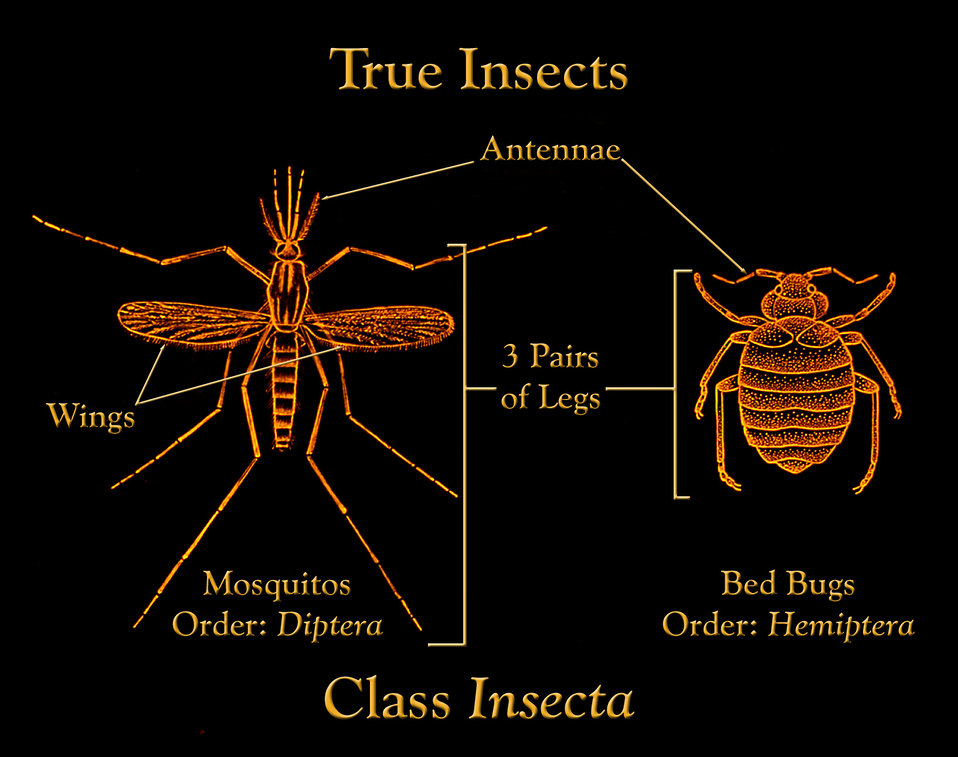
This drawing depicts the anatomic features found in members of the Class Insecta showing a mosquito and bedbug as examples.